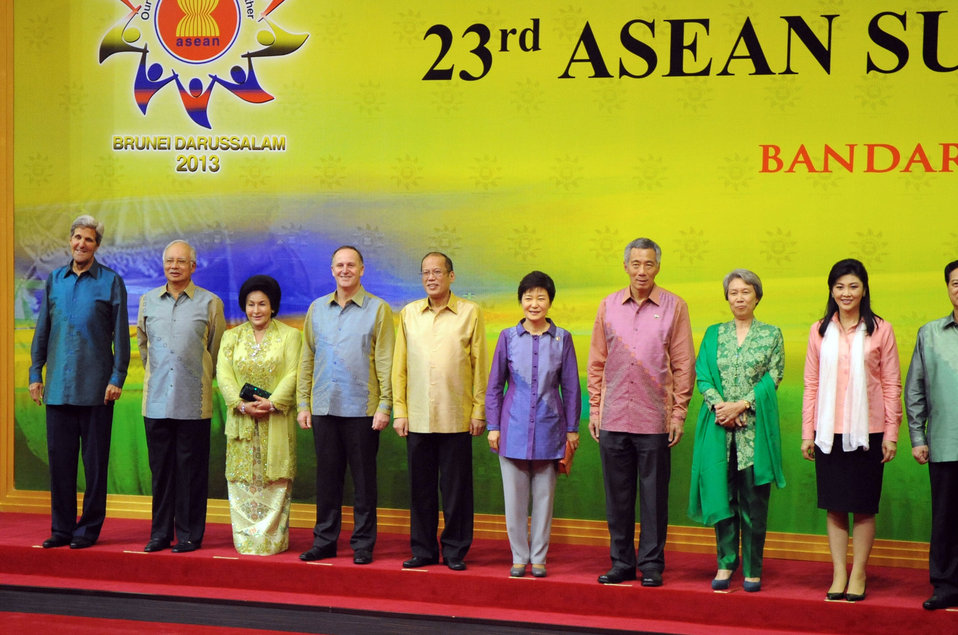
Secretary Kerry Poses With ASEAN Leaders

U.S. Secretary of State John Kerry poses with other regional heads of state and leaders of delegation before the start of a dinner and cultural program at the ASEAN Summit meeting in Bandar Seri Begawan, Brunei, on October 9, 2013.